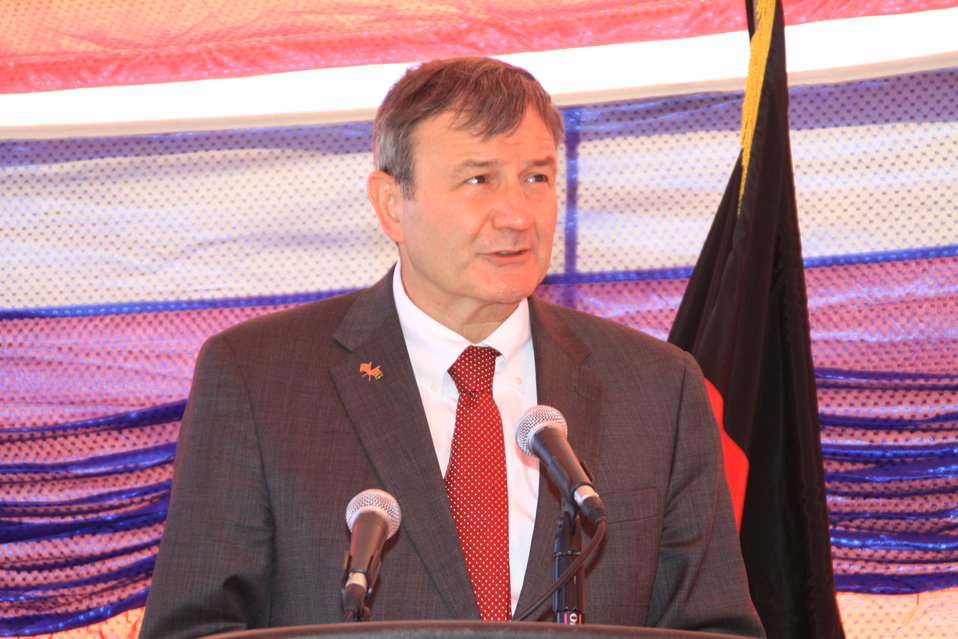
AVIPA Plus Wheat Seed Distribution 101005

US Ambassador Karl Eikenberry and USAID Acting Mission Director Kevin Brownawell joined the Minister of Agriculture, Irrigation and Livestock, H.E. Minister Mohammed Rahimi in signing a Memorandum of Understanding and distributing vouchers to area farmers for wheat and fertilizer.

US Ambassador Karl Eikenberry and USAID Acting Mission Director Kevin Brownawell joined the Minister of Agriculture, Irrigation and Livestock, H.E. Minister Mohammed Rahimi in signing a Memorandum of Understanding and distributing vouchers to area farmers for wheat and fertilizer.